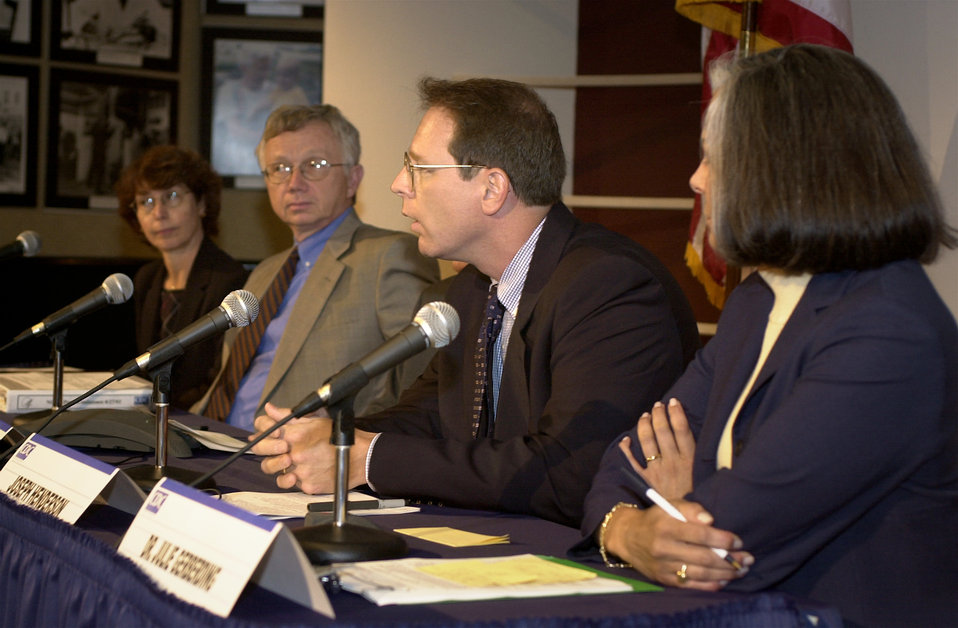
Centers for Disease Control and Prevention Bioterrorism Preparedness Press Briefing, August 27, 2002.